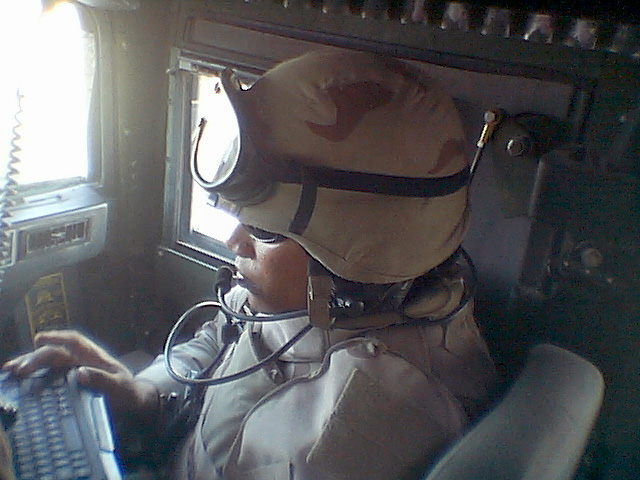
Tech. Sgt. Zapata

Tech. Sgt. Lorenzo Zapata sits at his convoy work station in a Humvee in 2007 in Iraq. Sergeant Zapata recently finished his time as a deployment transition center facilitator and has returned to regular duty at the 1st Combat Communications Squadron at Ramstein Air Base, Germany.